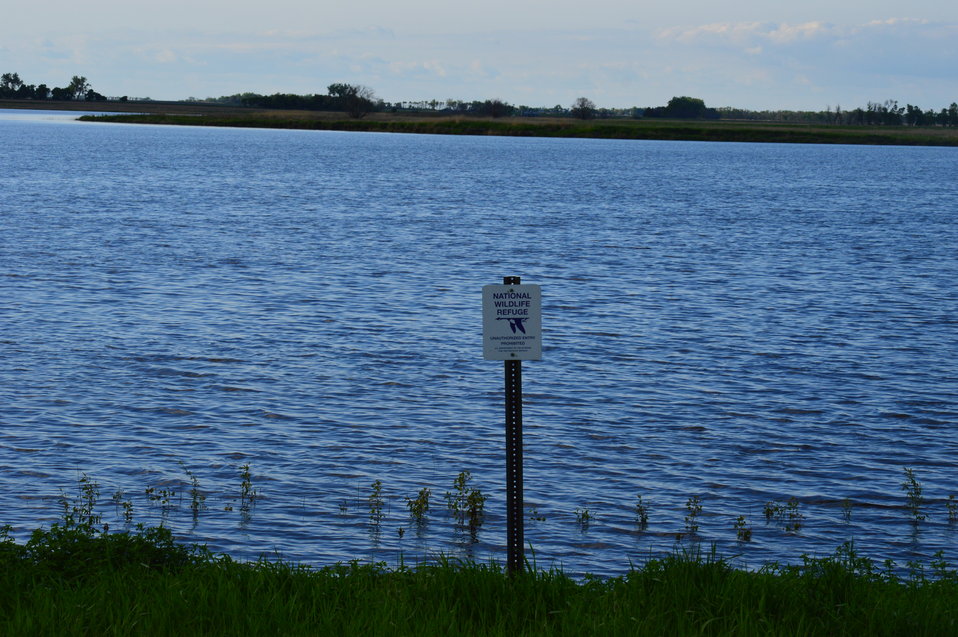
Sand Lake and NWR sign

Scenery and wildlife at Sand Lake National Wildlife Refuge in South Dakota